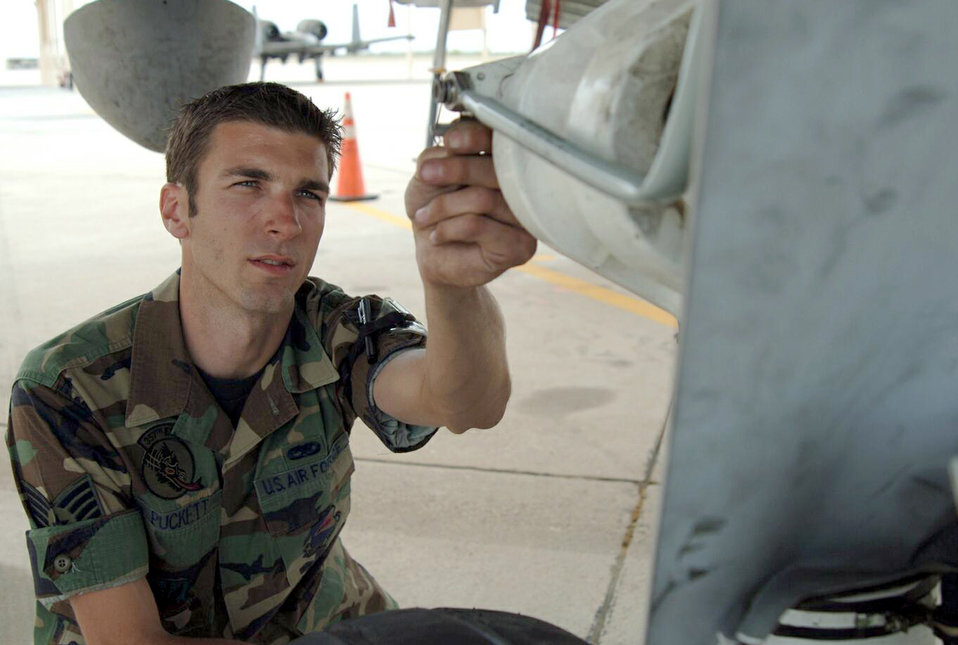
Analyze this

DAVIS-MONTHAN AIR FORCE BASE, Ariz. -- Staff Sgt. Thomas Puckett inspects an A-10 Thunderbolt II for a cost and analysis report on a recent aircraft mishap here. He is a crew chief assigned to the 355th Aircraft Maintenance Squadron.